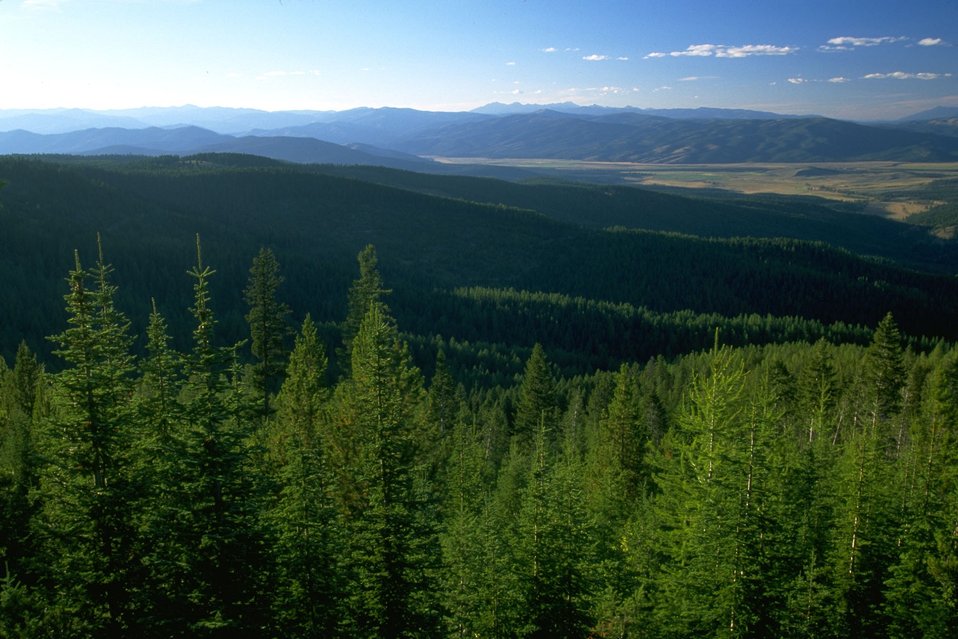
Scenic view from Garnet Back Country Byway--Blackfoot Valley